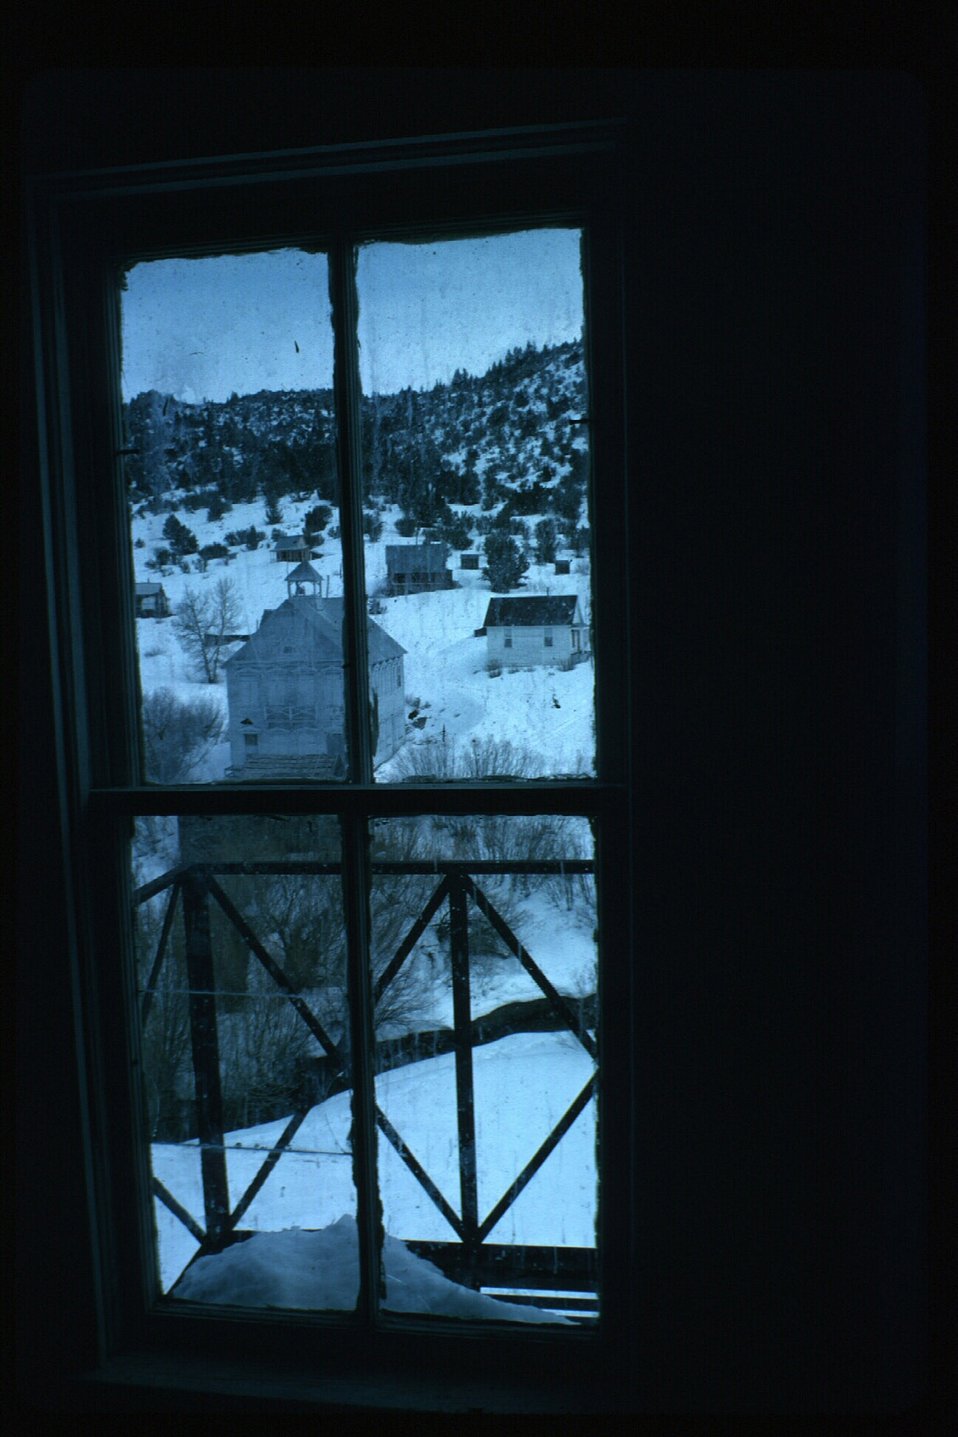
Architecture Silver City Cultural Resources Owyhee Field Office LSRD Lower Snake River District